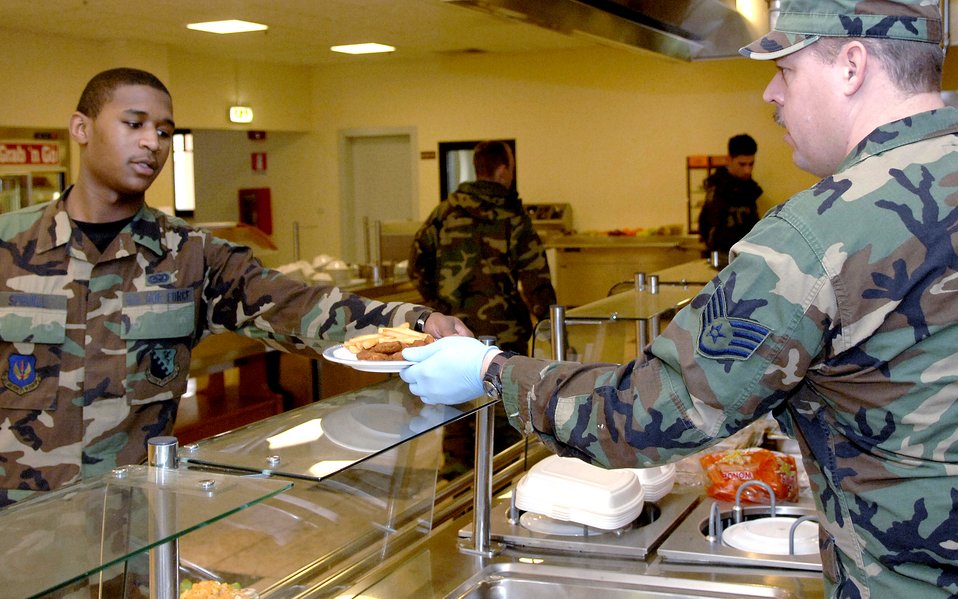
Serving Airmen

Staff Sgt. Troy Anderson serves lunch to an Airman at the La Dolce Vita Dining Facility Jan. 19 at Aviano Air Base, Italy. Sergeant Anderson is deployed to Aviano AB from the 121st Fighter Wing from Great Falls, Mont. Airmen at Aviano AB maintain two F-16 fighter squadrons to conduct regional and expeditionary operations under NATO, Supreme Allied Command Europe, or national tasking.